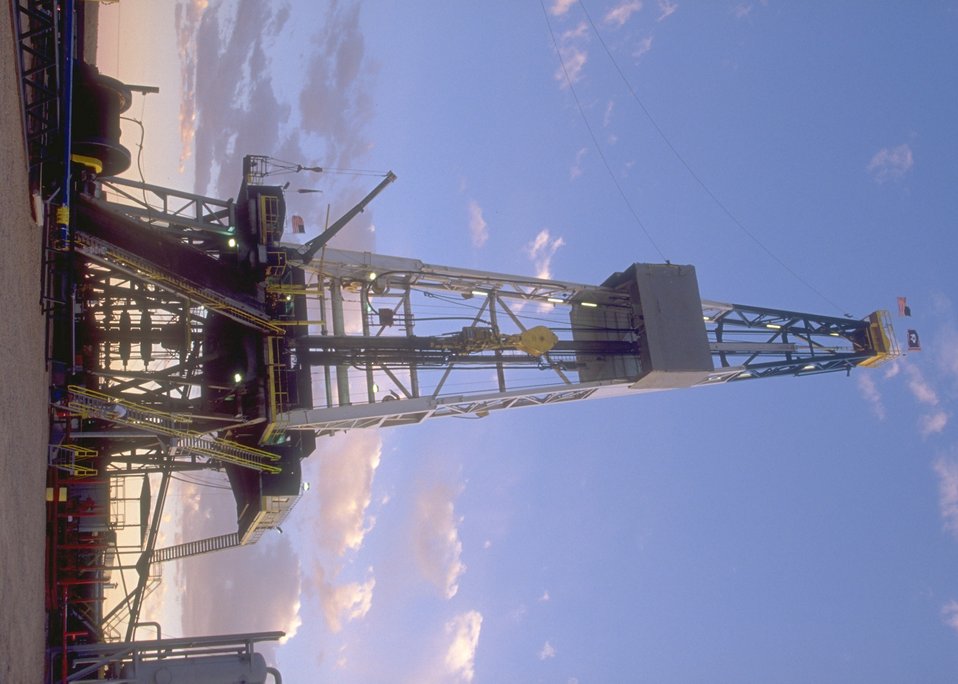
Burlington Northern deep well rig, Casper Field Office.